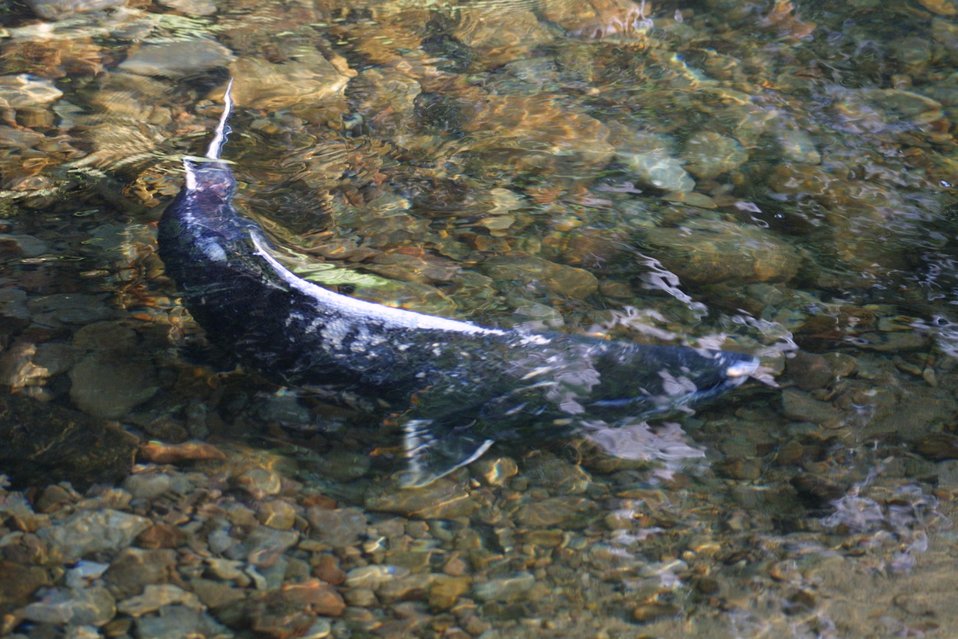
Adult Chinook Salmon spawning in Upper Tioga Creek, 11/8/01